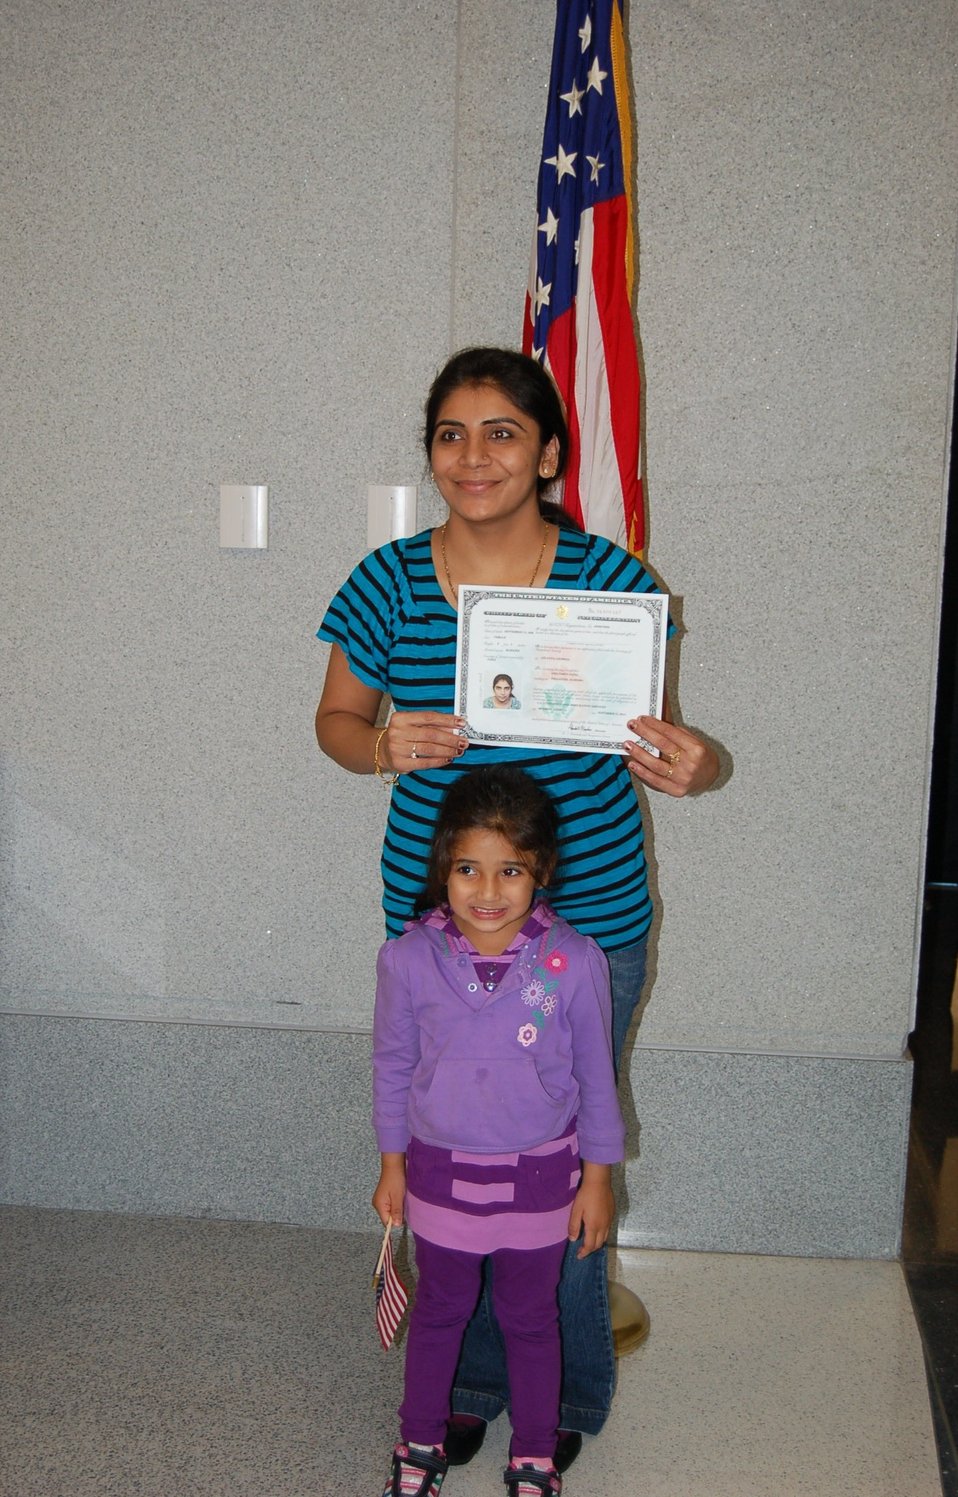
New Citizens